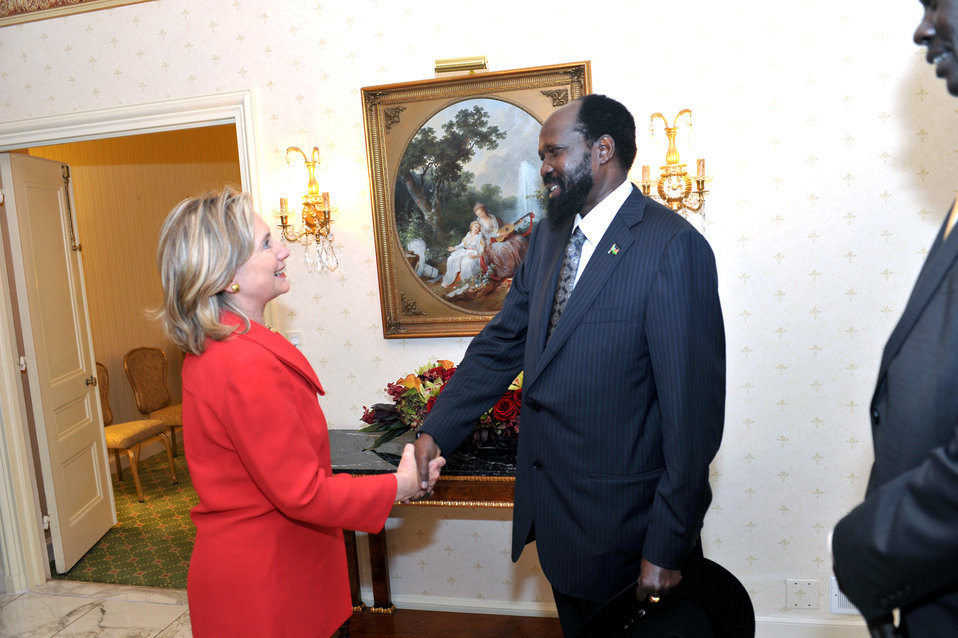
Secretary Clinton Shakes Hands With Sudanese Vice President Kiir

U.S. Secretary of State Hillary Rodham Clinton shakes hands with Sudanese Vice President Kiir after their bilateral meeting at the Waldorf-Astoria in New York, New York, on September 22, 2010.